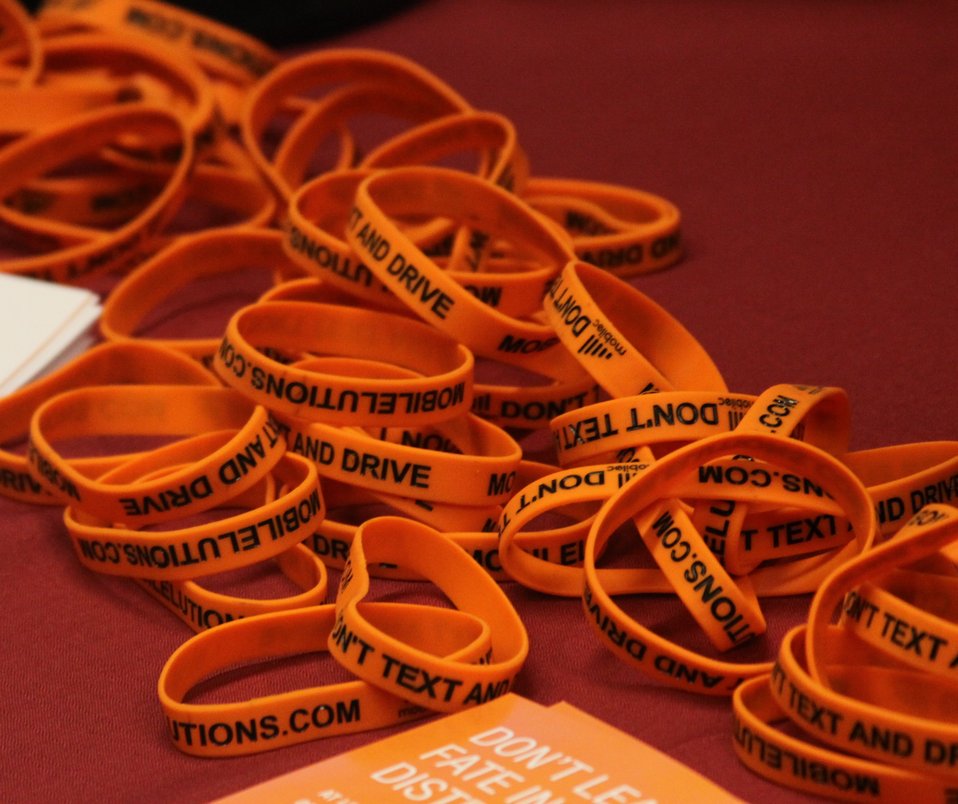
Distracted Driving Technology Showcase April 19, 2013